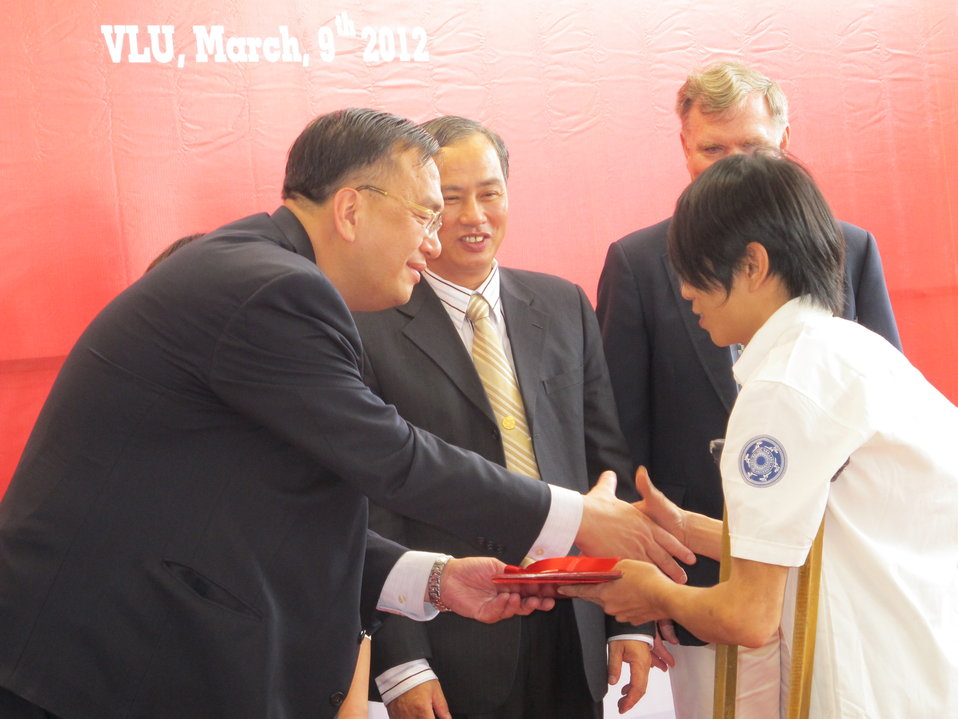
U.S. Counsel General Le Thanh An at the graduation ceremony for certificates in IT through a USAID-funded training program